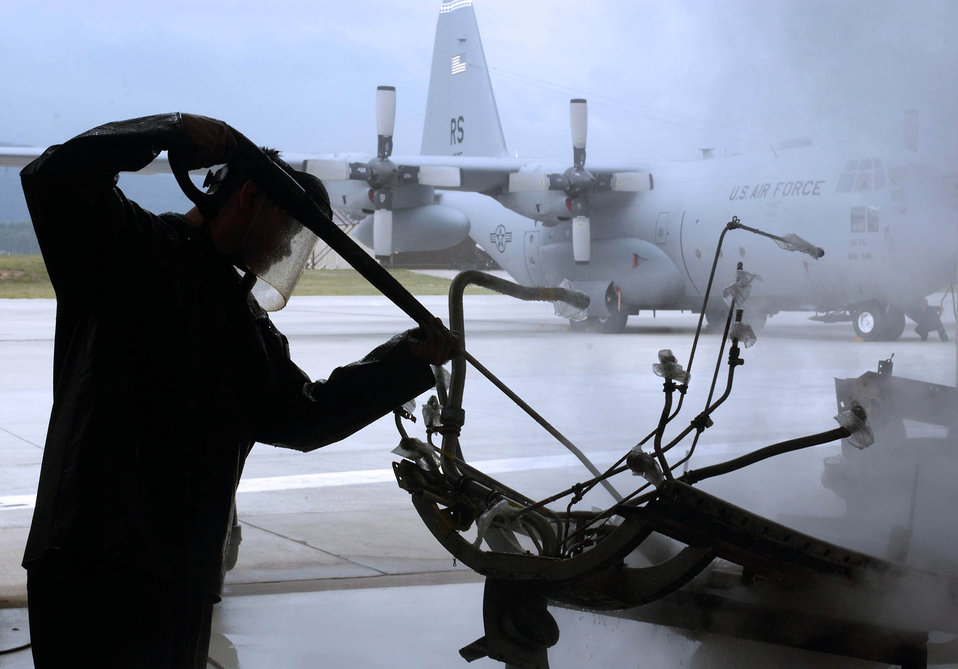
Herculean engine

RAMSTEIN AIR BASE, Germany -- Senior Airman Tyler Kehm uses high-pressure water spray to clean a section of a C-130 Hercules engine. The 86th Maintenance Squadron's propulsion flight here is the focal point for any C-130 engines needing repairs in Europe or those deployed supporting operations Iraqi Freedom and Enduring Freedom.